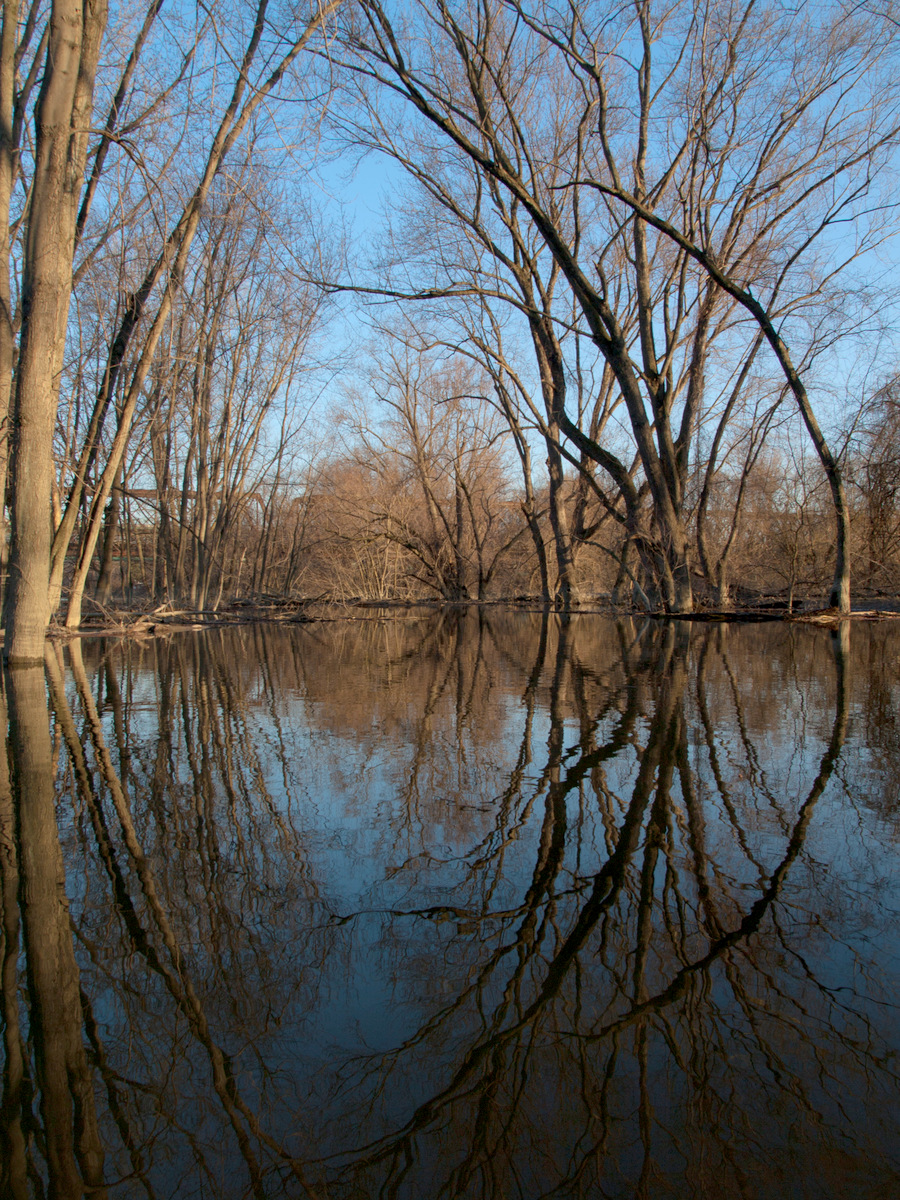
Connecticut River reflections in Hadley, MA.